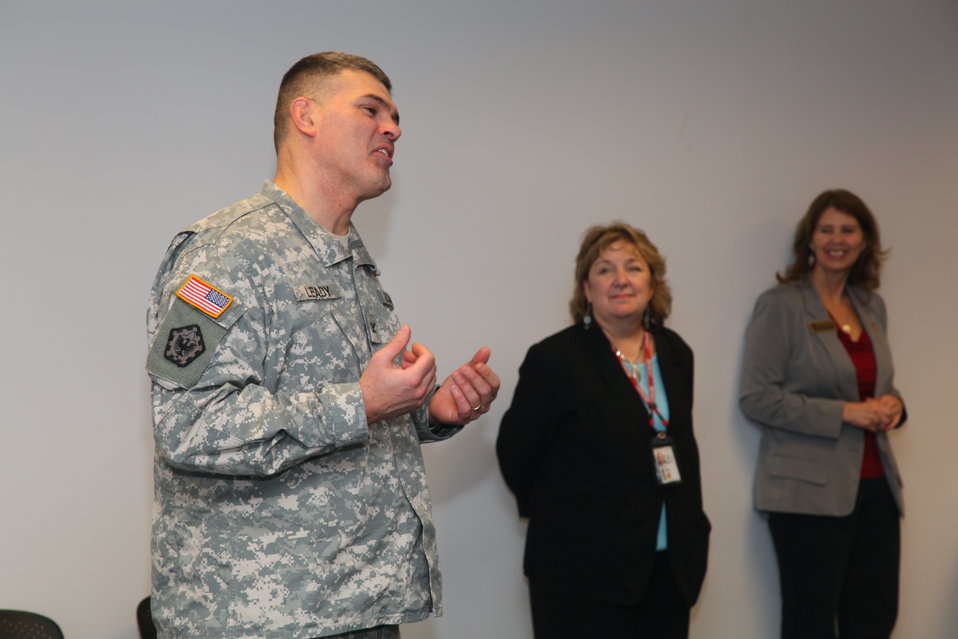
Sacramento District welcomes home Afghanistan volunteers

U.S. Army Corps of Engineers Sacramento District commander, Col. Bill Leady, welcomes home district employees who recently returned from service in Afghanistan at a ceremony in Sacramento, Calif., Jan. 13, 2012. In 2011 alone, the district saw 27 employees volunteer for service in Overseas Contingency Operations.